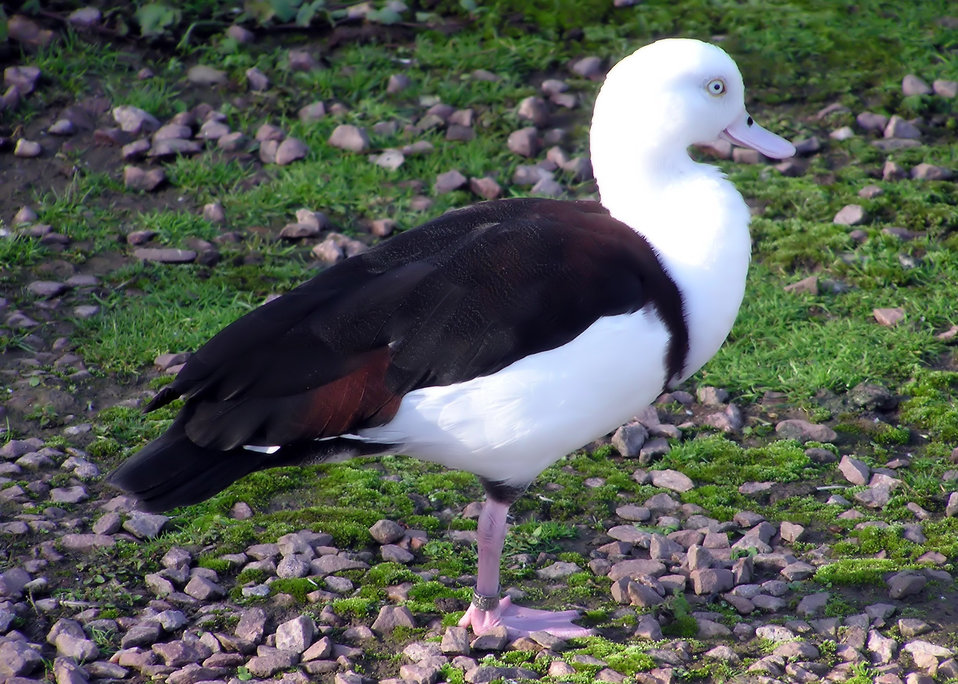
Radjah shelduck arp